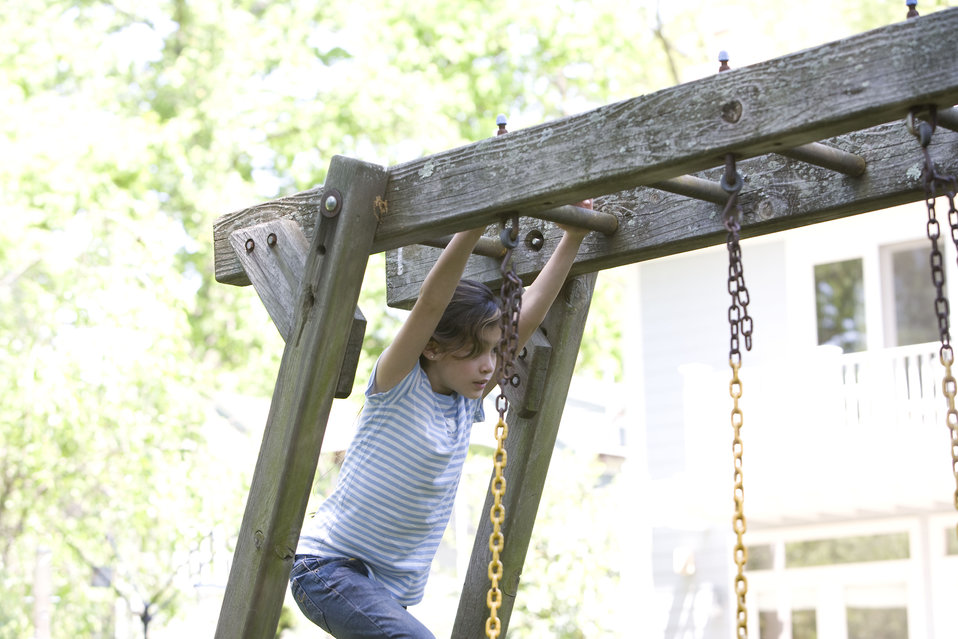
A young girl on a swing set

This young girl was playing outside on her backyard swing set. It's important to note that older wooden playsets may have been treated with arsenic and/or creosote, and therefore, parents need to know if these chemicals were used in their manufacture.